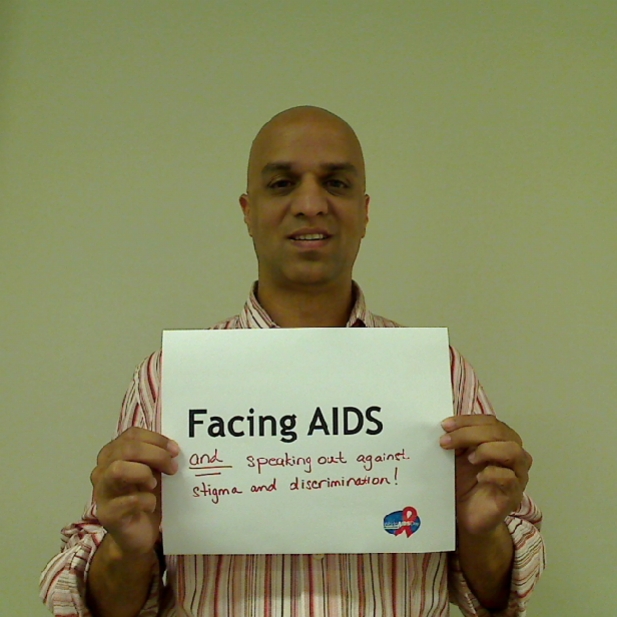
Facing AIDS and speaking out against stigma and discrimination!